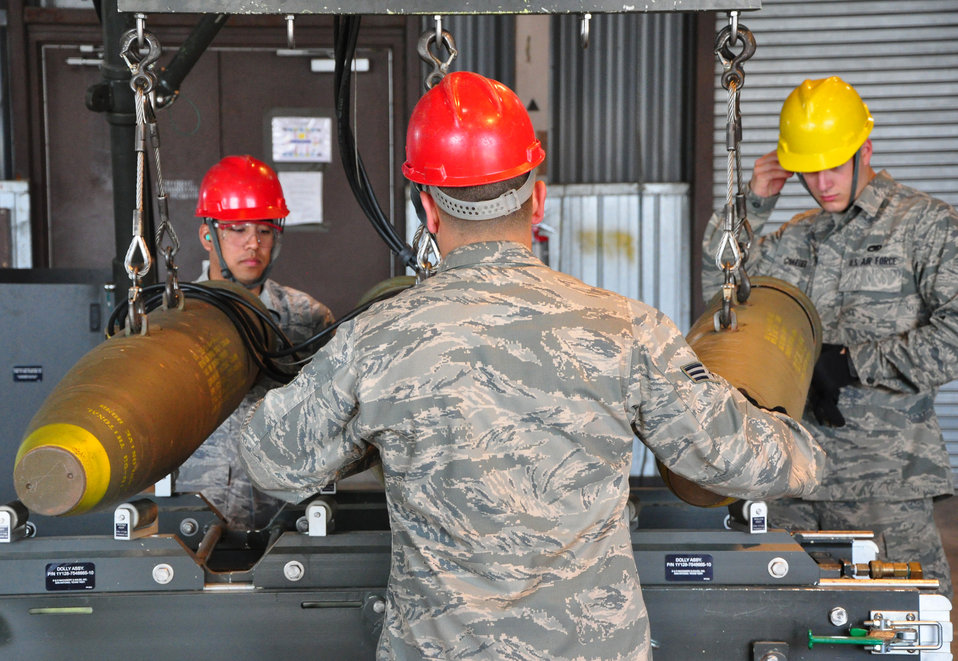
Loading munitions

Airmen at Osan Air Base, South Korea, build bombs May 3, 2011.